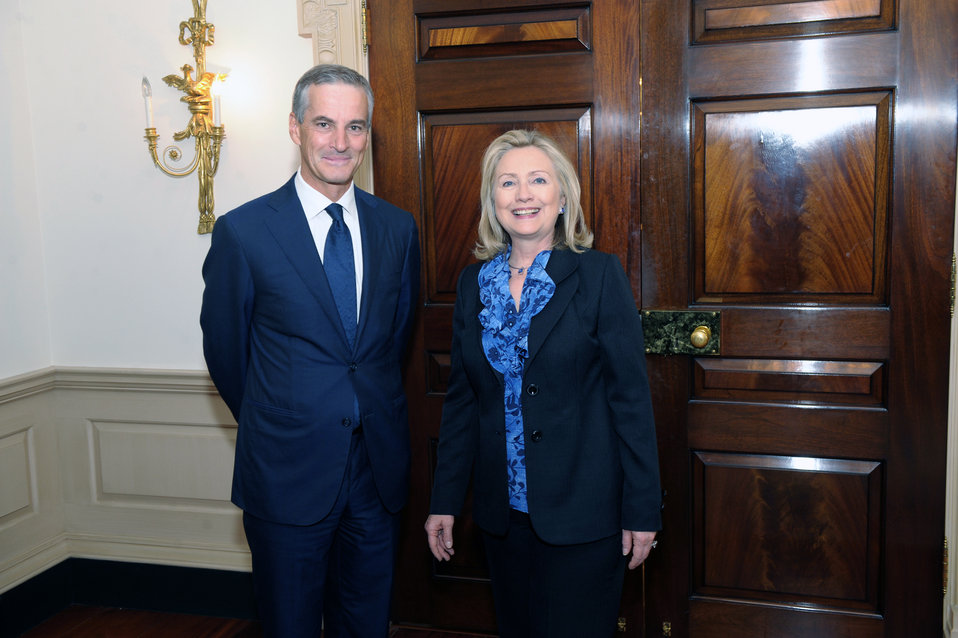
Secretary Clinton Meets With Norwegian Foreign Minister Stoere

U.S. Secretary of State Hillary Rodham Clinton and Norwegian Foreign Minister Jonas Gahr Stoere meet at the U.S. Department of State in Washington, D.C., on August 12, 2011.